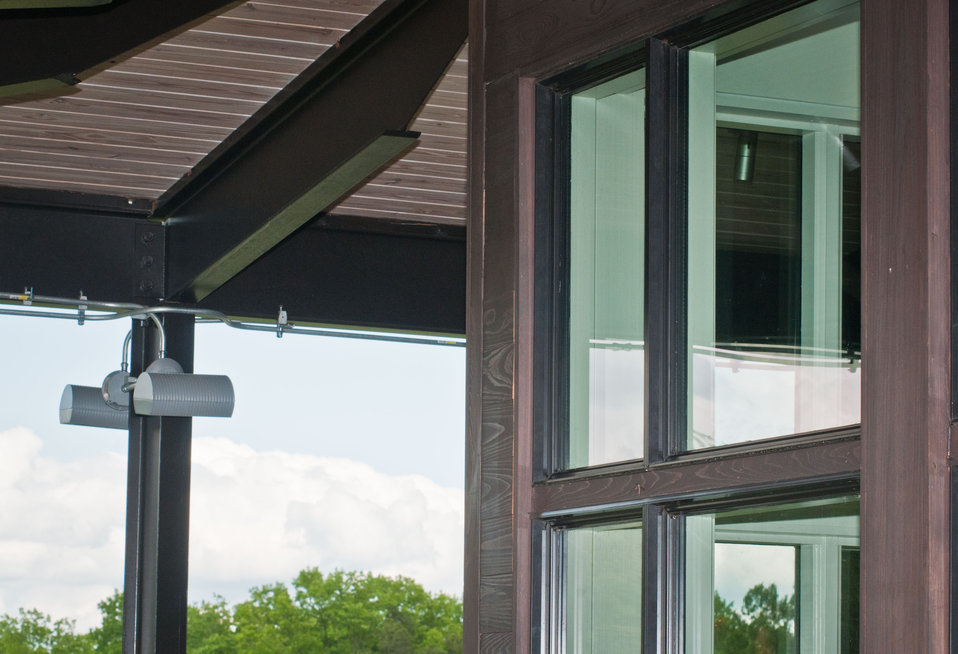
Cooper Vineyards in Louisa, VA, is the first winery on the East Coast and the second in the country to be awarded the fourth and highest, Platinum certification by Leadership in Energy and Environmental Design (LEED).
From a Virginia Wine Board Marketing Office press release, “The process of building a LEED platinum certified building was initially more expensive and arduous than co-owners, Jacque Hogge, MD and Geoffrey Cooper, MD expected, but they were able to get financial assistance from the United States Department of Agriculture. “Know that there are grants available to help with the costs of sustainable building projects,” Hogge advises to other potential green wineries. Cooper Vineyards received 2 of the 3 USDA (U.S. Department of Agriculture Rural Development (RD) Rural Energy Financing program) grants awarded in Virginia in 2010 to help with the expenses of their construction.”
Rural Energy Financing program focuses on loan guarantees, loans and grants to agricultural producers, businesses, cooperatives and rural residents for renewable energy systems and to make energy efficiency improvements.
The tasting room and building collects rainwater from the roof; uses low flow water fixtures to reduce usage by 40%; utilizes structurally insulated panels for the roof and walls; heats and cools the entire building using a geothermal system that includes pipes that are embedded in the parking lot; low-voltage LED lighting with daylight and occupancy sensors provide ample light when it is needed; a solar panel array provides more than 15% of the energy needs for the building, and much of the construction materials are from local and recycled material sources. For more information about USDA please go to www.usda.gov, Rural Development and Rural Energy Financing. LEED was developed by the U.S. Green Building Council (USGBC) is a 501 c3 non-profit organization committed to a prosperous and sustainable future for our nation through cost-efficient and energy-saving green buildings.